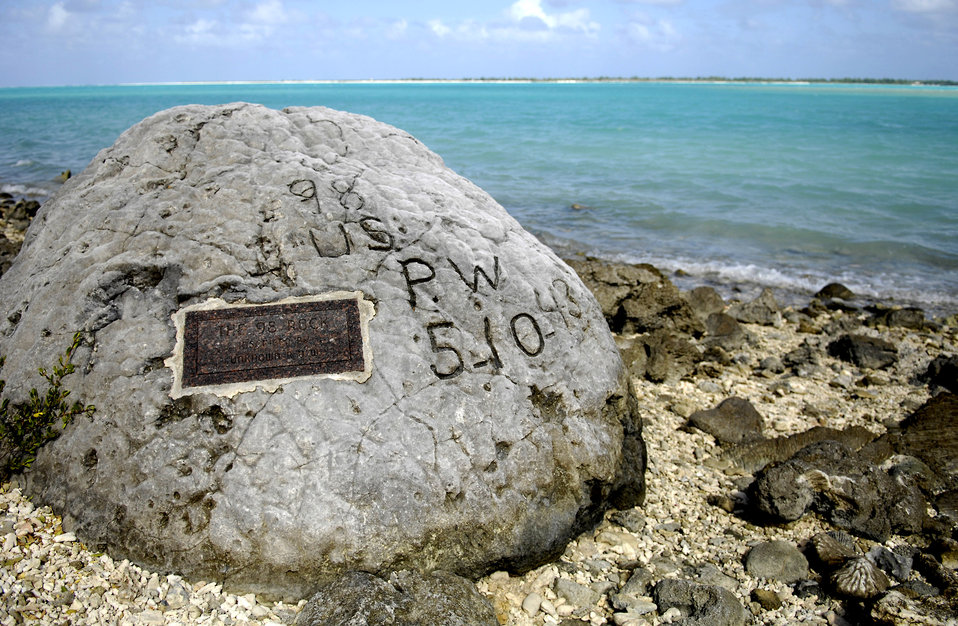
Servicemembers search for POW/MIAs on Wake Island

A memorial to prisoners of war is seen Jan. 12 on Wake Island. The